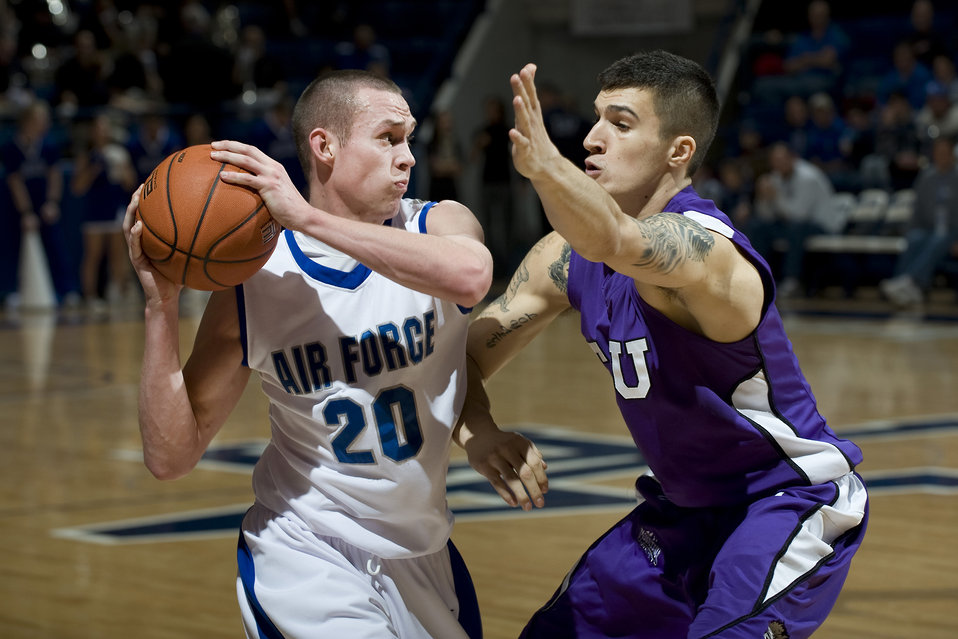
Horned Frogs surpass Falcons

Academy junior forward Tom Fow tries to hold off defender Nikola Cerina Feb. 6, 2010, at the U.S. Air Force Academy's Clune Arena. The Falcons fell short of their goal, losing to Texas Christian University by a score of 65-51.